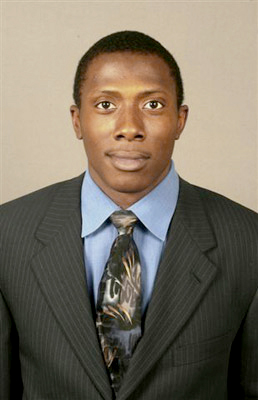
Suicide: Never knowing why

Airman 1st Class Anthony Arline.